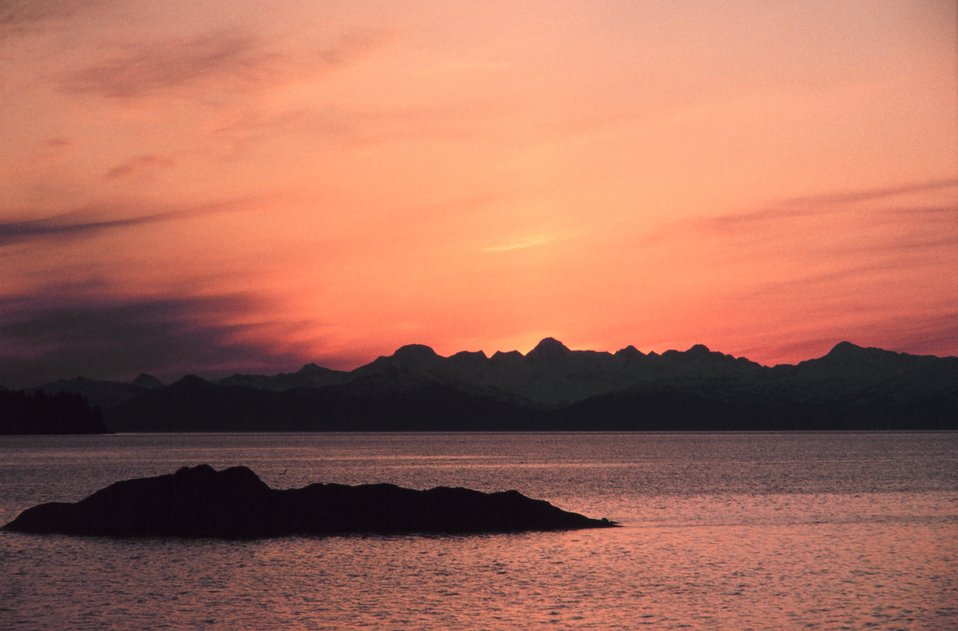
An islet in the foreground and mountains sharing the vista with a peach-hued sunset.